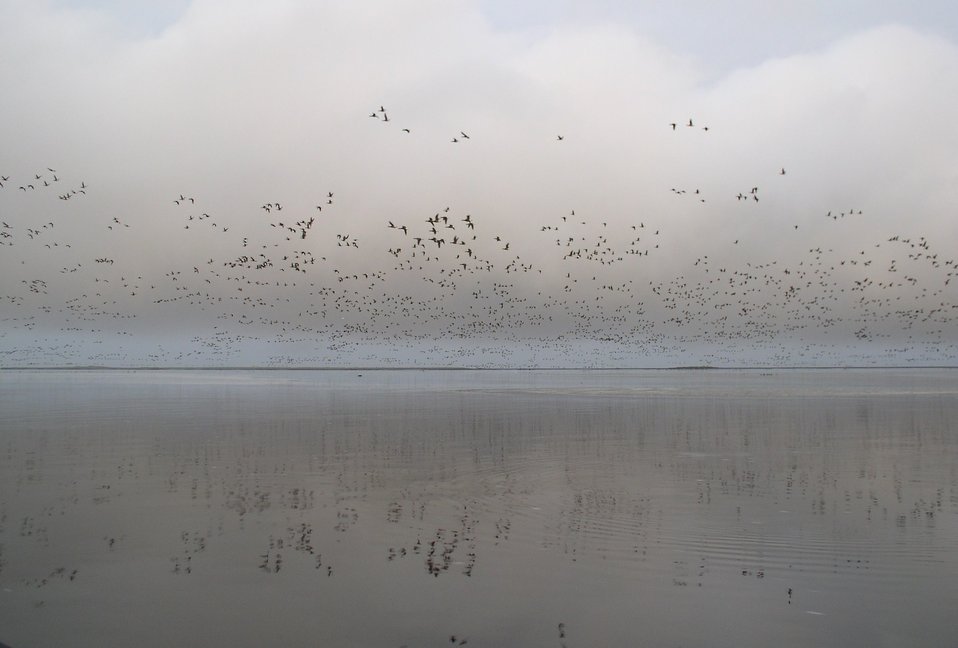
Brant at Izembek Lagoon

Izembek National Wildlife Refuge